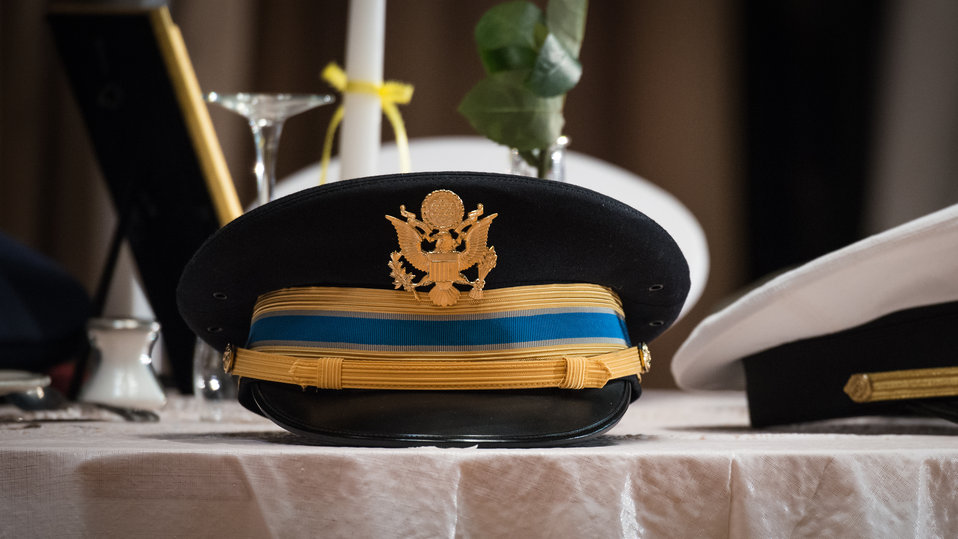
A service hat representing the U.S. Army (USA) by Captain (retired) U.S. Army and Vietnam veteran Andrew Malloy at the Prisoner of War (POW)/Missing in Action (MIA) Honors Ceremony at the U.S. Department of Agriculture (USDA) Veterans’ Day Observance, whose theme is “VALOR, COURAGE, SACRIFICE – HONORING ALL WHO SERVED,” in Washington, DC, on Wednesday, November 20, 2013.